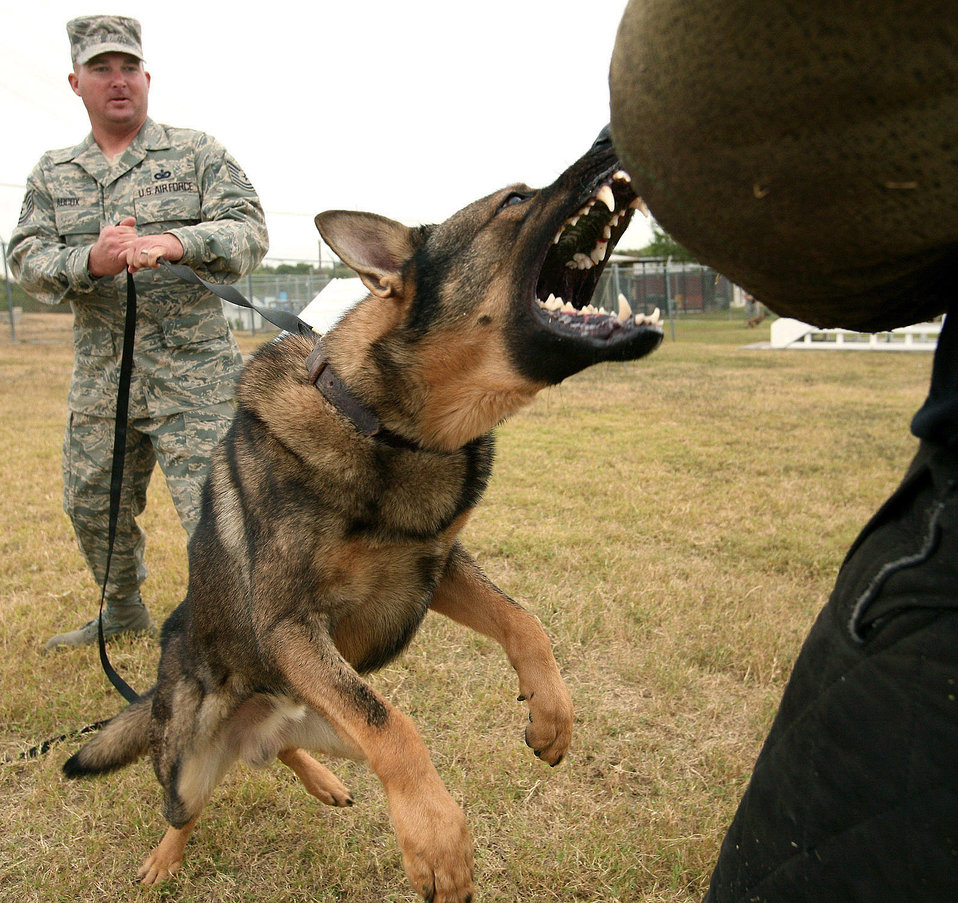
Taking a bite out of crime

Samo leaps forward toward a decoy's arm wrap as Tech. Sgt. David Adcox restrains him. Samo and Sergeant Adcox conducted a training demonstration Nov. 7 during a military working dog conference at Lackland Air Force Base, Texas. Sergeant Adcox and Samo are with the 341st Training Squadron at Lackland.